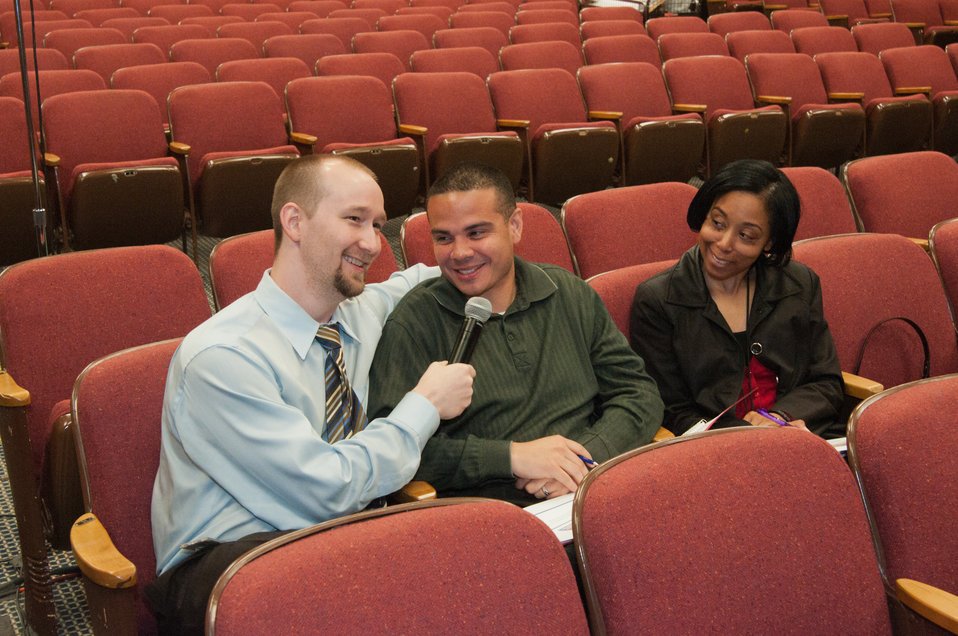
(L to R) Office of Personnel Management (OPM) Diversity and Inclusion Program Manager Michael Murray poses a question about disability diversity and inclusion in the workforce to U.S. Department of Agriculture (USDA) Food and Nutrition Service (FNS) employees Manny Ramirez and Karen White at USDA’s Office of Human Resources Management (OHRM) Disability Employment Program Team Training at USDA in Washington, D.C. on Tuesday, May 14, 2013.